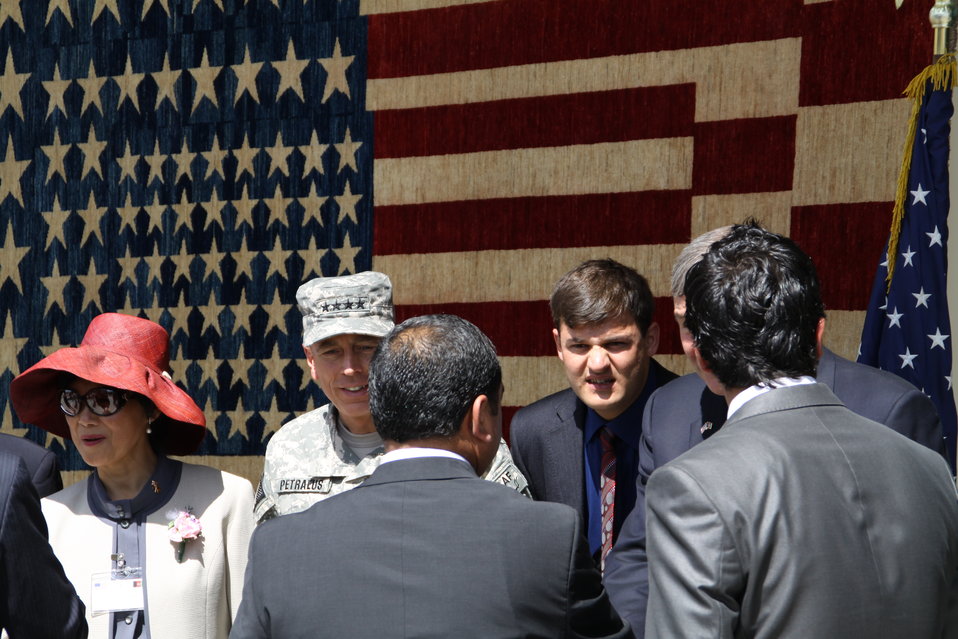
Kabul Official July 4th Celebration